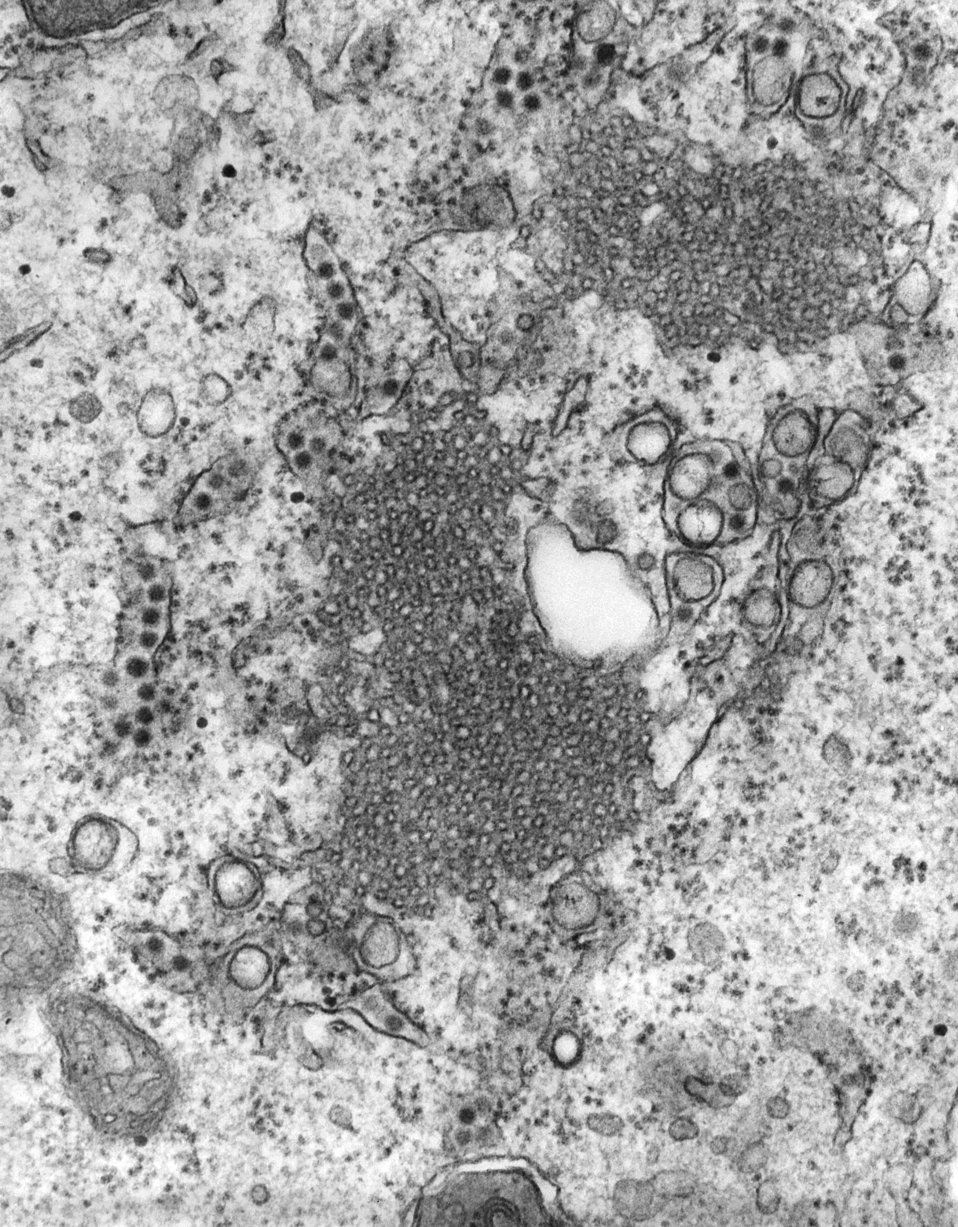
This negatively-stained transmission electron micrograph (TEM) revealed the presence of numerous St. Louis encephalitis virions that were contained within a central nervous system tissue sample. St. Louis encephalitis (SLE) virus is a member of the genus Flavivirus, family Flaviviridae. Other similar diseases are West Nile virus (WNV), eastern equine encephalitis (EEE), western equine encephalitis (WEE), and La Crosse encephalitis.